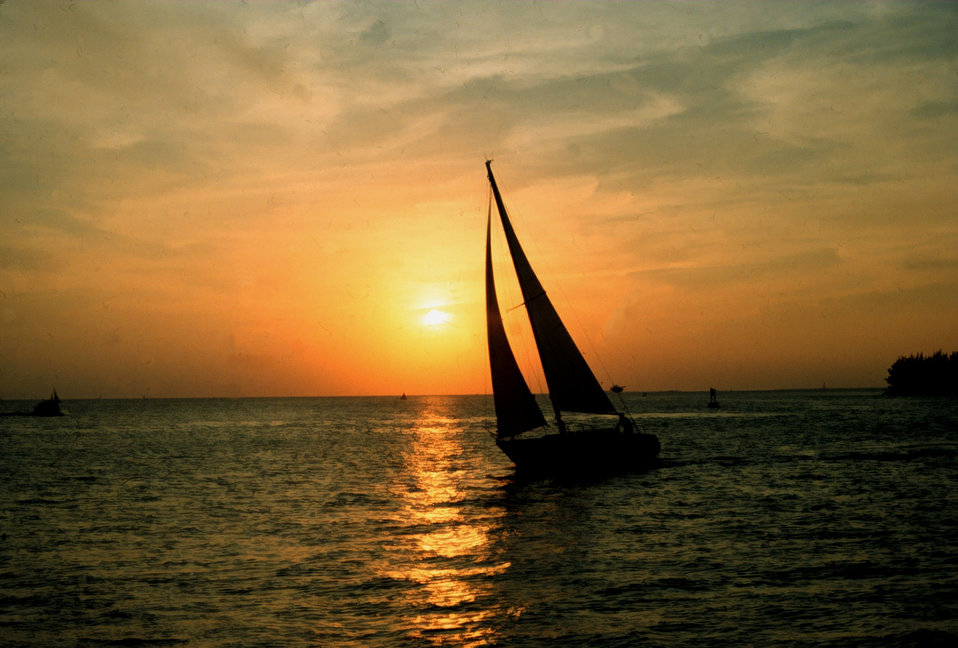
Sailing days sunset